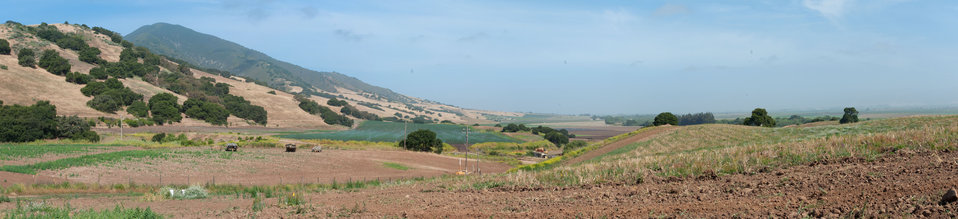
(Download Original for best viewing) Virtual panorama of Leafy Greens, operated by farmer Tom Heess in the Salinas Valley, California on Thursday, June 16, 2011. Leafy Greens grows row crops of lettuce, broccoli, cauliflower sweet peas and seed beans. He uses rotational crop plantings to control weeds and plant disease. When a plot of land is at rest, he plants a cover crop of barley and rye grass (foreground) because the roots hold the topsoil reducing erosion of the soil. He is converting his irrigation system from conventional sprinklers (operating field behind large tree in the center) to micro irrigation (on fields not seen here). Where one system produces runoff and erosion (right of center tree) of the soil; the other has little or no erosion, less maintenance, easy harvest and less water is needed. When seasonal rains produce runoff, the silt that flows with it is caught in sediment ponds (far left, left and right of center tree and right of field being watered). The ponds have grass, bushes and trees to hold the structure and allow the silt to settle. Spillways lead to holding ponds and eventually the Salinas River (tree line behind the three trees on right) a tributary of the Monterey Bay National Marine Sanctuary. So far, because of its design and efficiency, no water has made it to the river.